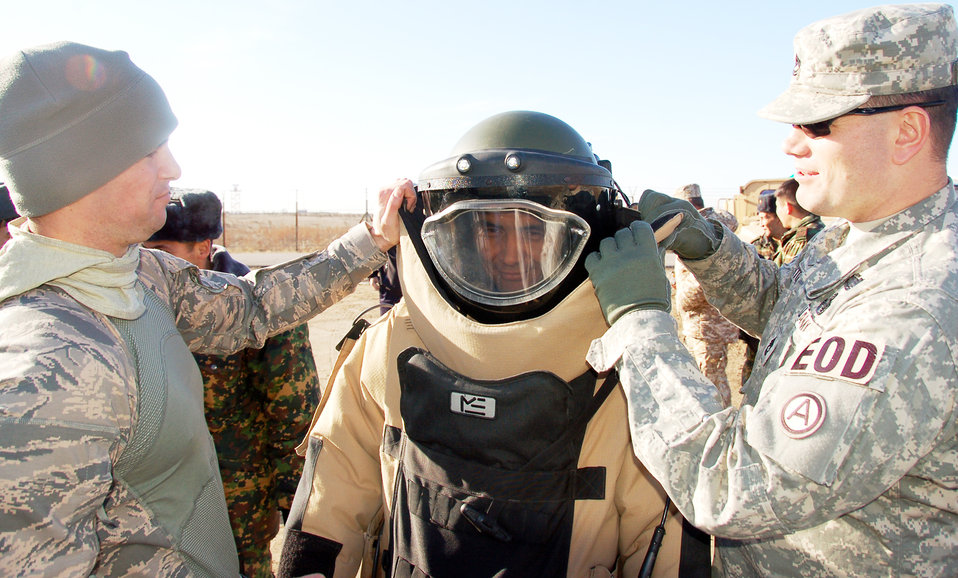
Airmen train Kyrgyz officials on EOD mission

Kyrgyz Lt. Col. Kadyrov Almazbek tries on an explosive ordnance disposal protection suit and helmet Dec. 15, 2009, while (far left) Tech. Sgt. Joseph Deslauriers and Army Sgt. 1st Class Stephen Fitch help out during the Kyrgyz Ministry of Defense team's visit to learn about EOD operations from Airmen with the 376th Expeditionary Civil Engineer Squadron at the Transit Center at Manas, Kyrgyzstan. Sergeant Deslauriers is an EOD technician assigned to the 376th ECES.